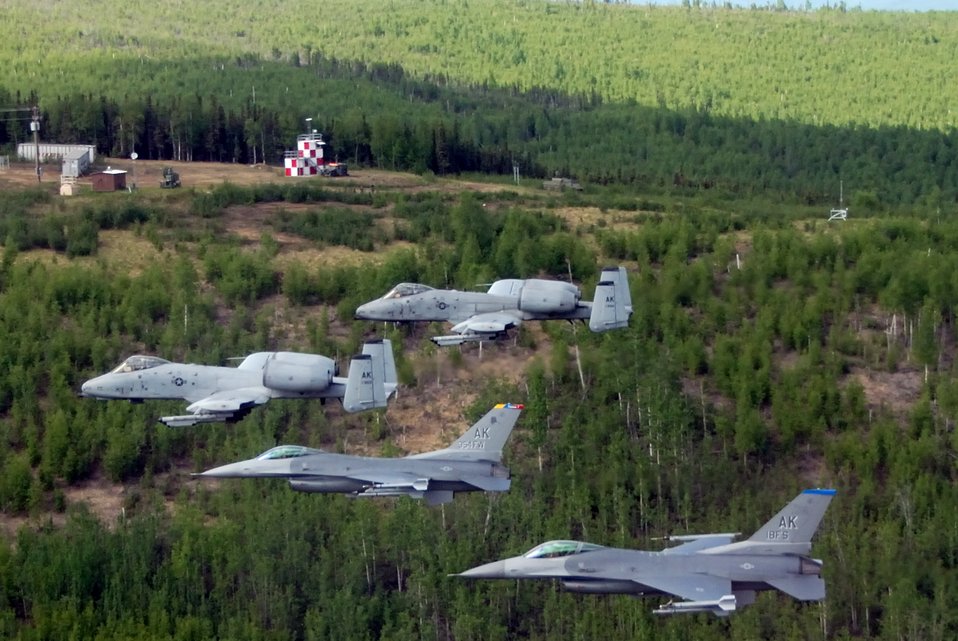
Final flight for fighters

Two F-16 Fighting Falcons from the 18th Fighter Squadron and two A-10 Thunderbolt IIs from the 355th Fighter Squadron fly May 29 over the Pacific Alaska Range Complex in Alaska. The aircraft assigned to Eielson Air Force Base, Alaska, flew in formation for the last time due to the deactivation of the 18th and 355th Fighter Squadrons.